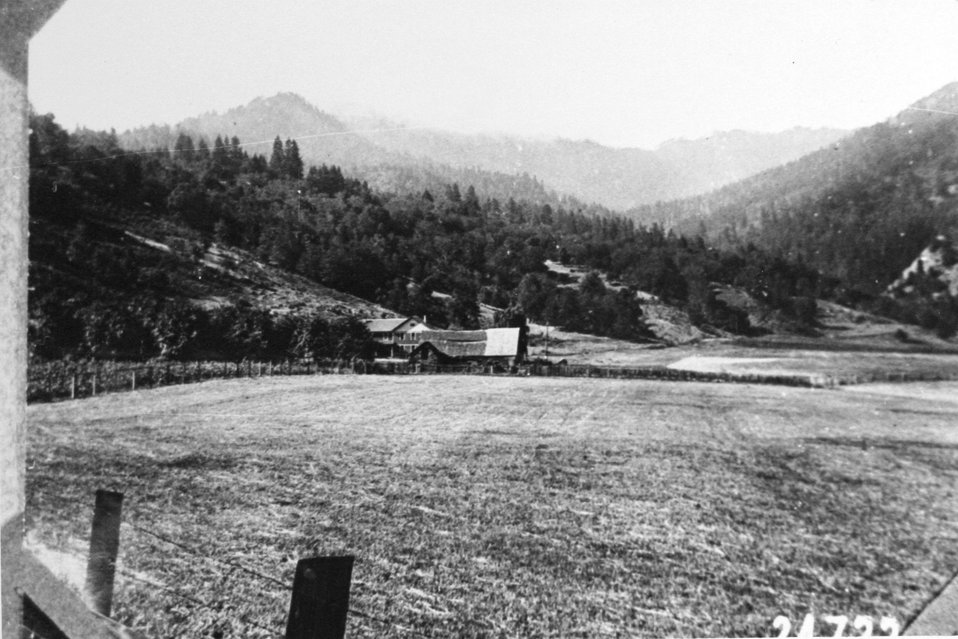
Jake Fry's Big Bend Ranch.